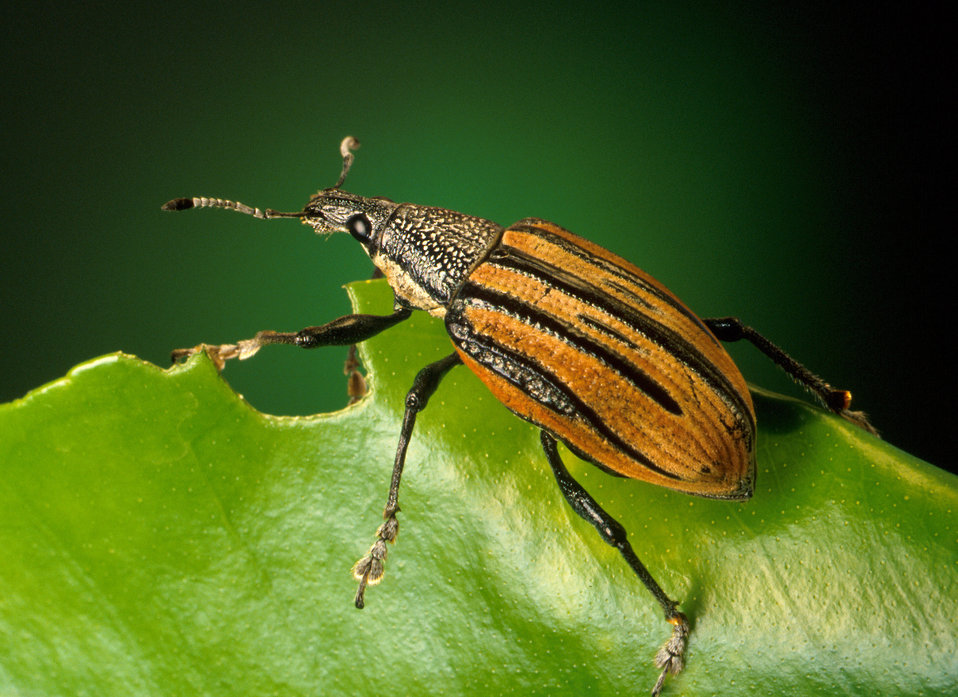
An adult citrus root weevil (Diaprepes) gnaws on a citrus leaf. The adult citrus root weevil’s elytra are glossy black with large stripes of tiny yellowish-orange scales, and its head and legs are black. A female weevil lays approximately 5,000 eggs and the larvae emerge from the eggs, fall to the ground, and burrow down to the roots of the host plant. They feed on the roots for several months. The adult weevil feed son the foliage of the plant, but it is the larvae that do the most damage.